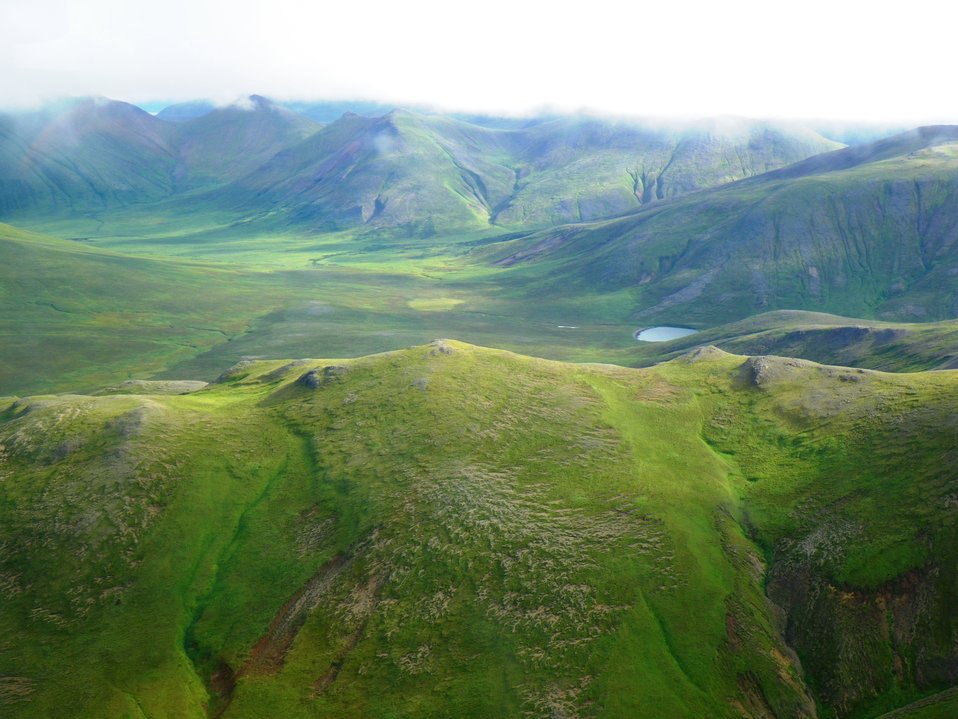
Unimak Landscapes

SE Unimak Island, Alaska Maritime National Wildlife Refuge